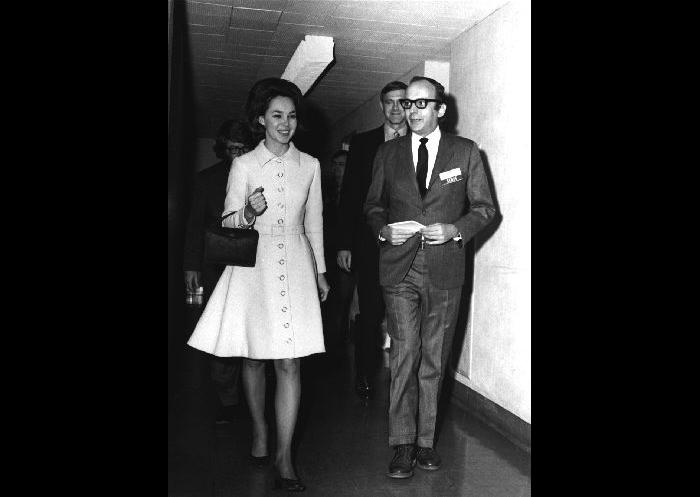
This image shows Julie Nixon Eisenhower walking with Former CDC Director, Dr. David Sencer; Former CDC Director, Dr. William Foege can be seen in the background, as well.